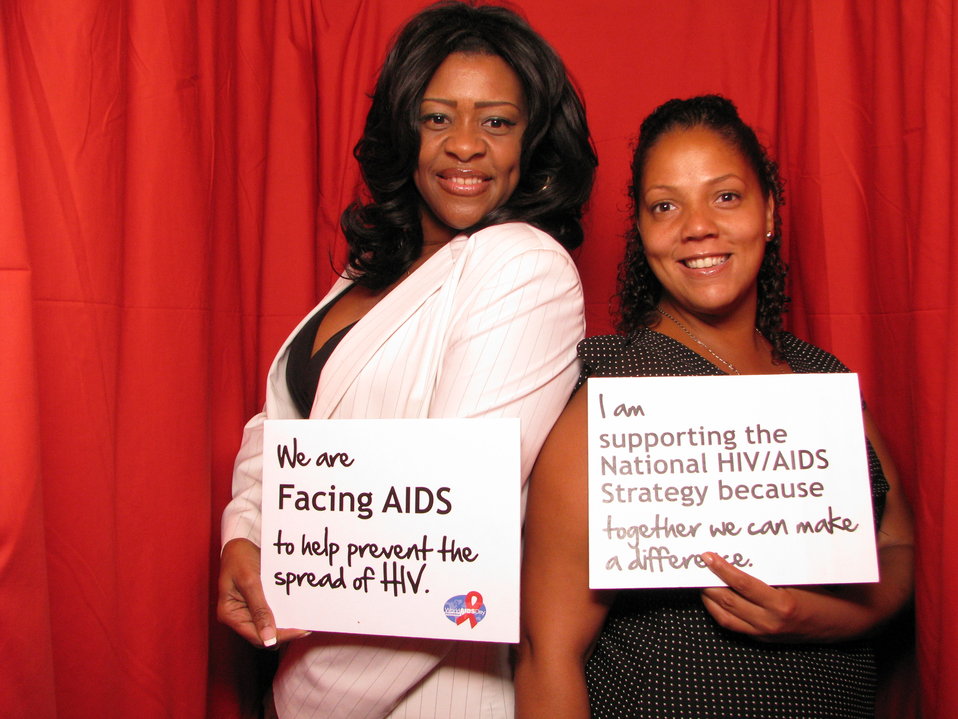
We are FACING AIDS to Help Prevent the Spread of HIV. I am Supporting the National HIV/AIDS Strategy because Together We Can Make a Difference.

From the AIDS.gov photo booth at the U.S. Conference on AIDS, September 2010 (Orlando, FL).